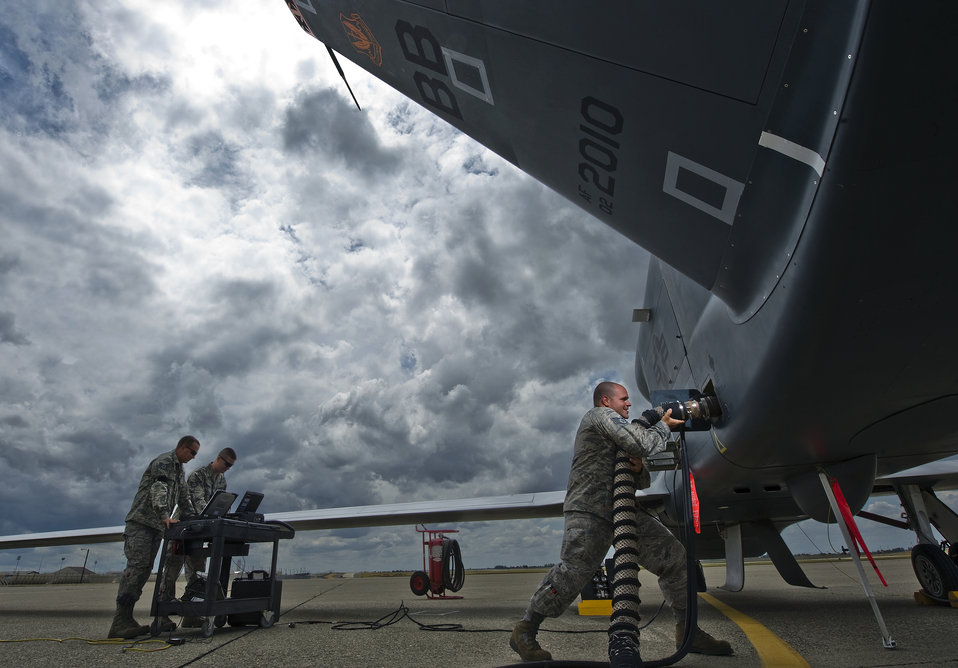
Global Hawk takes northern route, improves efficiency

Staff Sgt. John Signorelli attaches a Dash-95 air cart to a RQ-4 Global Hawk May 26, 2010, at Beale Air Force Base, Calif. The air cart provides air to the starter for launch. Sergeant Signorelli is a crew chief assigned to the 12th Reconnaissance Squadron.